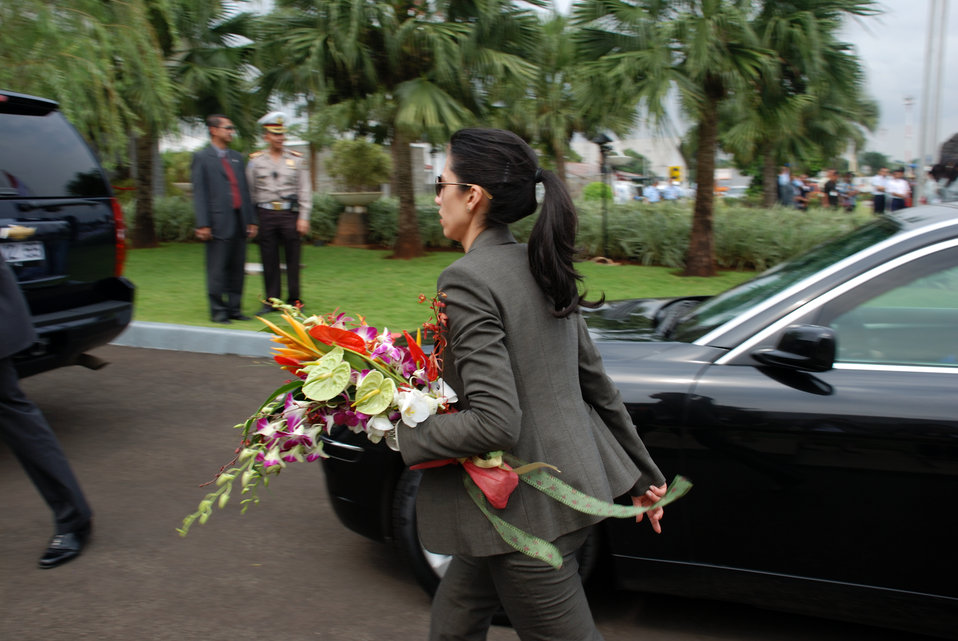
Behind the Scenes: Preparing for Secretary Clinton's Indonesia Visit

U.S. Secretary of State Hillary Rodham Clinton staff member takes flowers to the waiting car before she arrives in Jarkarta, Indonesia during the visit of U.S. Secretary of State Hillary Rodham Clinton February 18, 2009.